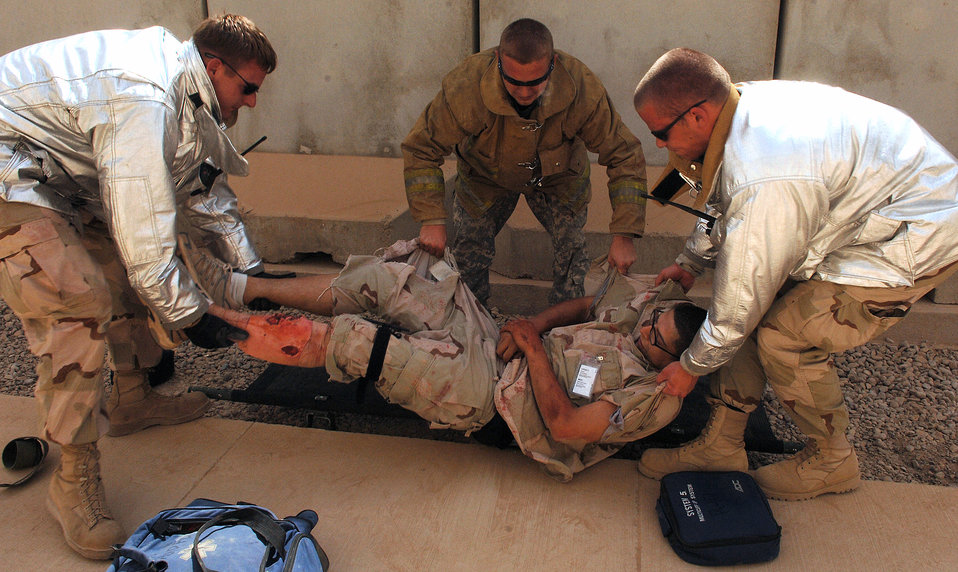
Practice makes perfect

Senior Airman Adam Mercer, Army Spc. James Taylor and Senior Airman Aaron Huddle load a patient onto a stretcher during a mass accident response exercise Aug. 11 at Joint Base Balad, Iraq. More than 100 Airmen and Soldiers participated in the joint exercise ensuring first responders are ready for any situation at any time. The firefighters are assigned to the Joint Base Balad Fire Department here. Airman Mercer is deployed from Misawa Air Base, Japan, Specialist Taylor is deployed from Fort Bragg, N.C., and Airman Huddle is deployed from Andersen Air Force Base, Guam.